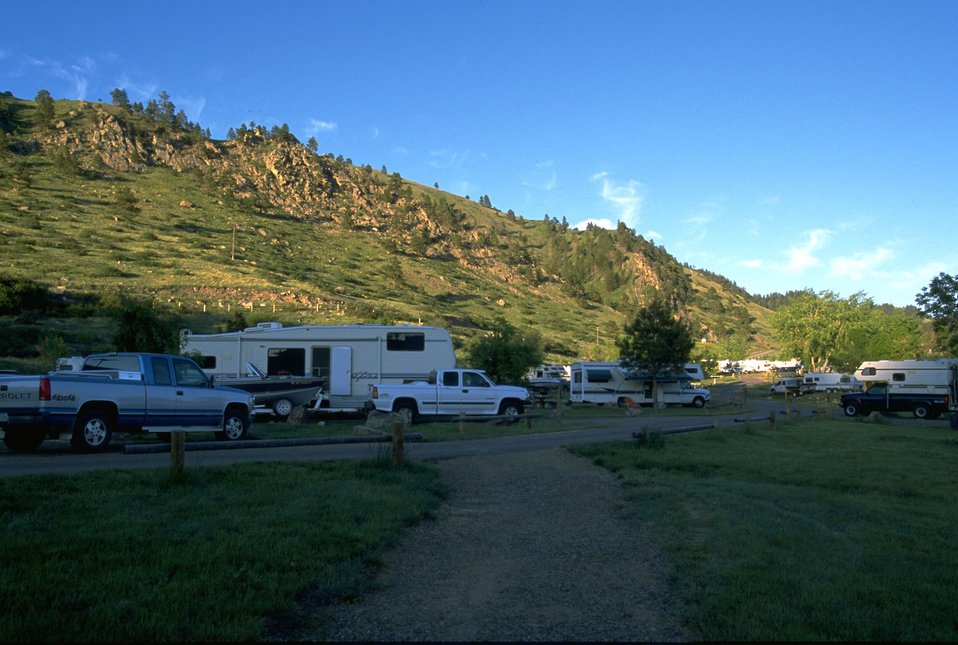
Campers at Holter Lake Campground